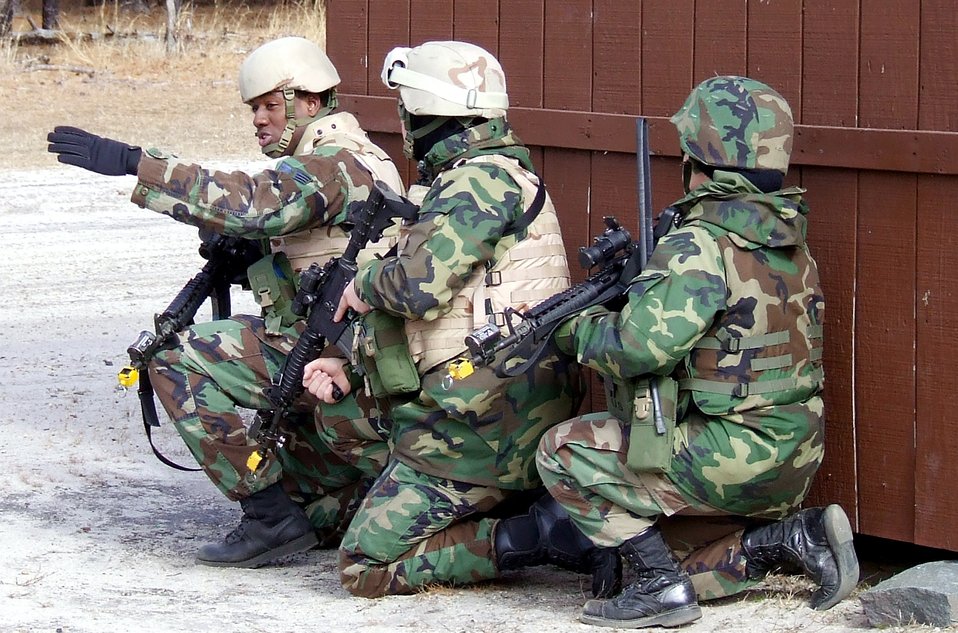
Warrior training

Staff Sgt. Robert Graves leads a group of students in a military operations in urban terrain scenario during training Feb. 20 on a range at Fort Dix, N.J. The course is taught by members of the Air Force Expeditionary Center's Expeditionary Operations School and 421st Combat Training Squadron and the course prepares security forces Airmen for upcoming deployments. Sergeant Graves is assigned to the 569th U.S. Forces Police Squadron from Vogelweh Air Base, Germany, and is a student in the Air Force Phoenix Warrior Training Course 08-3.